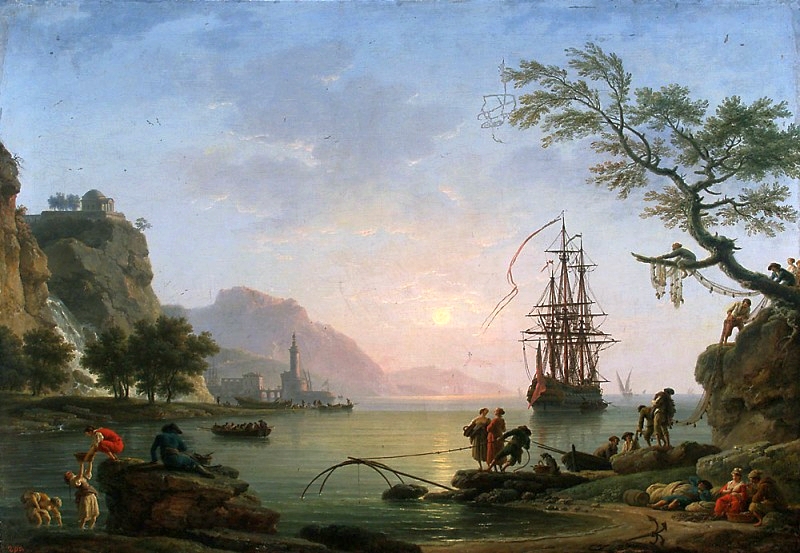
Vernet Morning